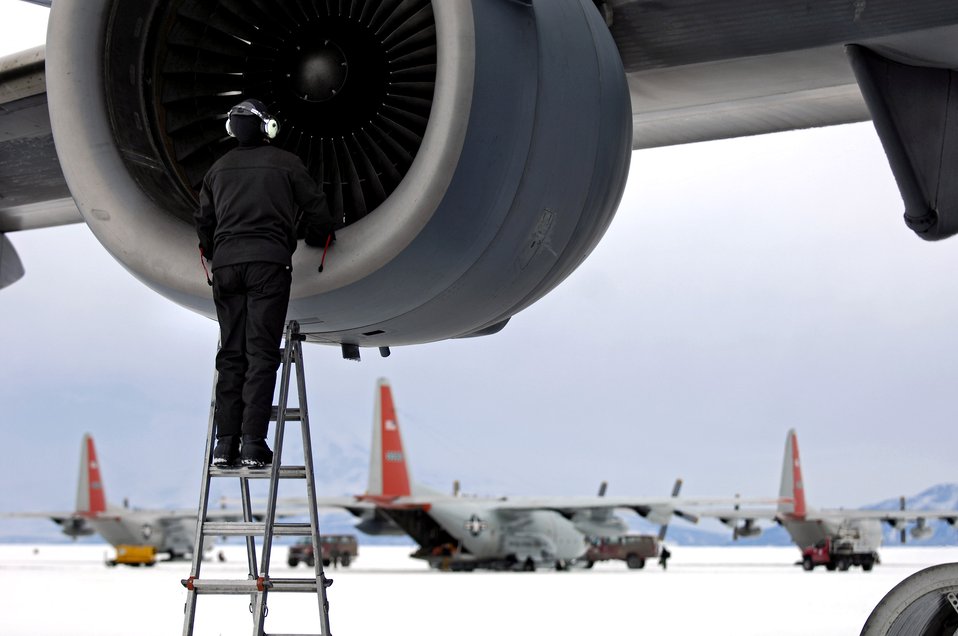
Supporting Operation Deep Freeze

Staff Sgt. Lance Hasz conducts a pre-flight inspection on a C-17 Globemaster III prior to its taking off Nov. 22 from McMurdo Station, Antarctica, during the 13th Air Force-led Joint Task Force Support Forces Antarctica's Operation Deep Freeze.